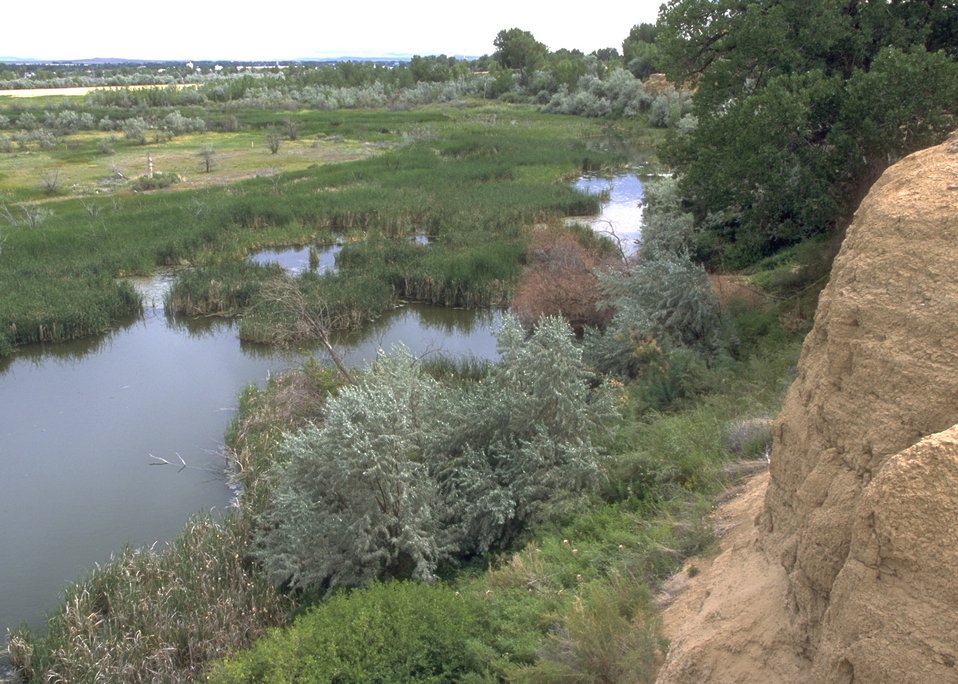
Duck Swamp Interpretive Area, Worland Field Office.